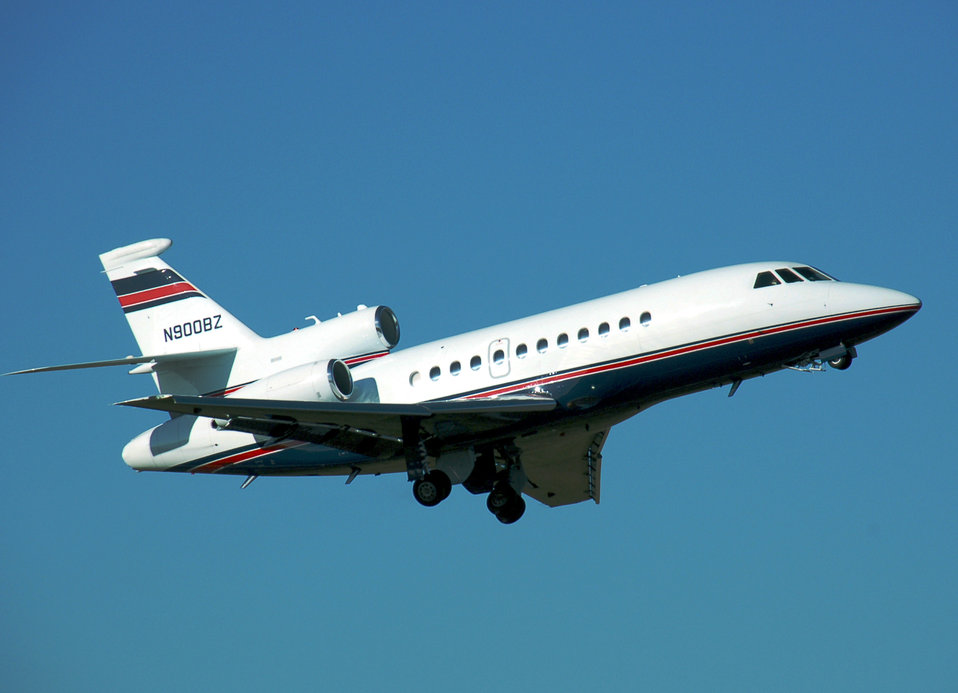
Dassault Falcon 900EX (US registration N900BZ) takes off from London Luton Airport, England.